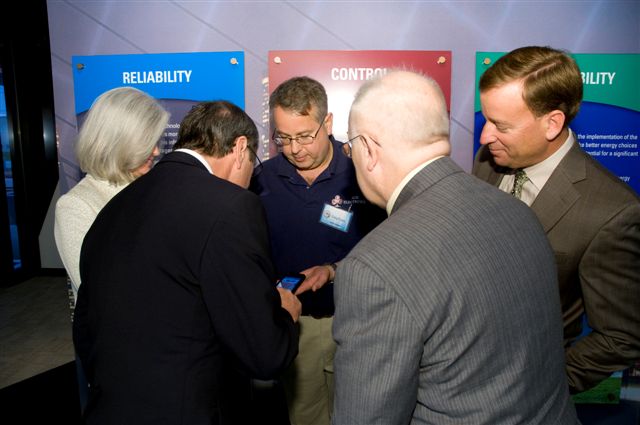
Craig Funni demonstrates a smart monitor iphone app